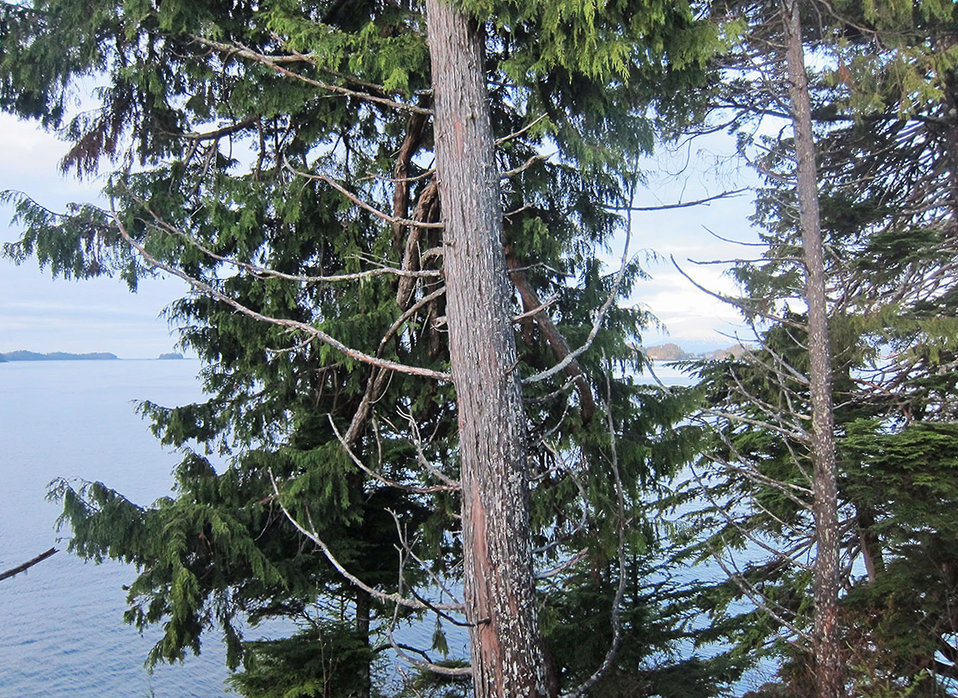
Alaska winter yellow cedar dying a

Two yellow cedar trees have fallen victim to the yellow cedar decline. The smaller tree on the right recently died and the larger tree on the left is slowly dying.